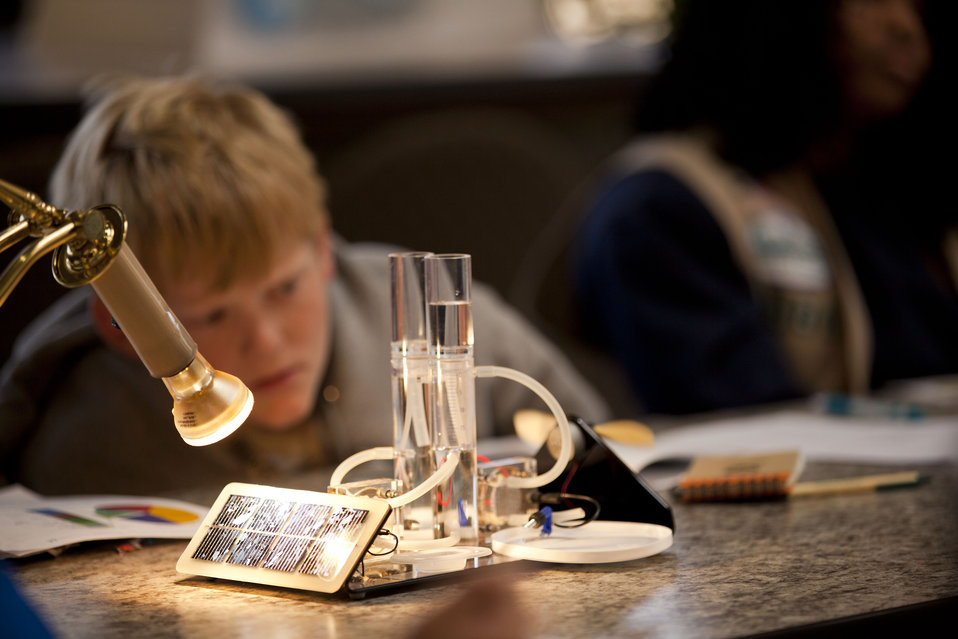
A Boy Scout watches light shine on a solar panel, showing how photovoltaic panels work.